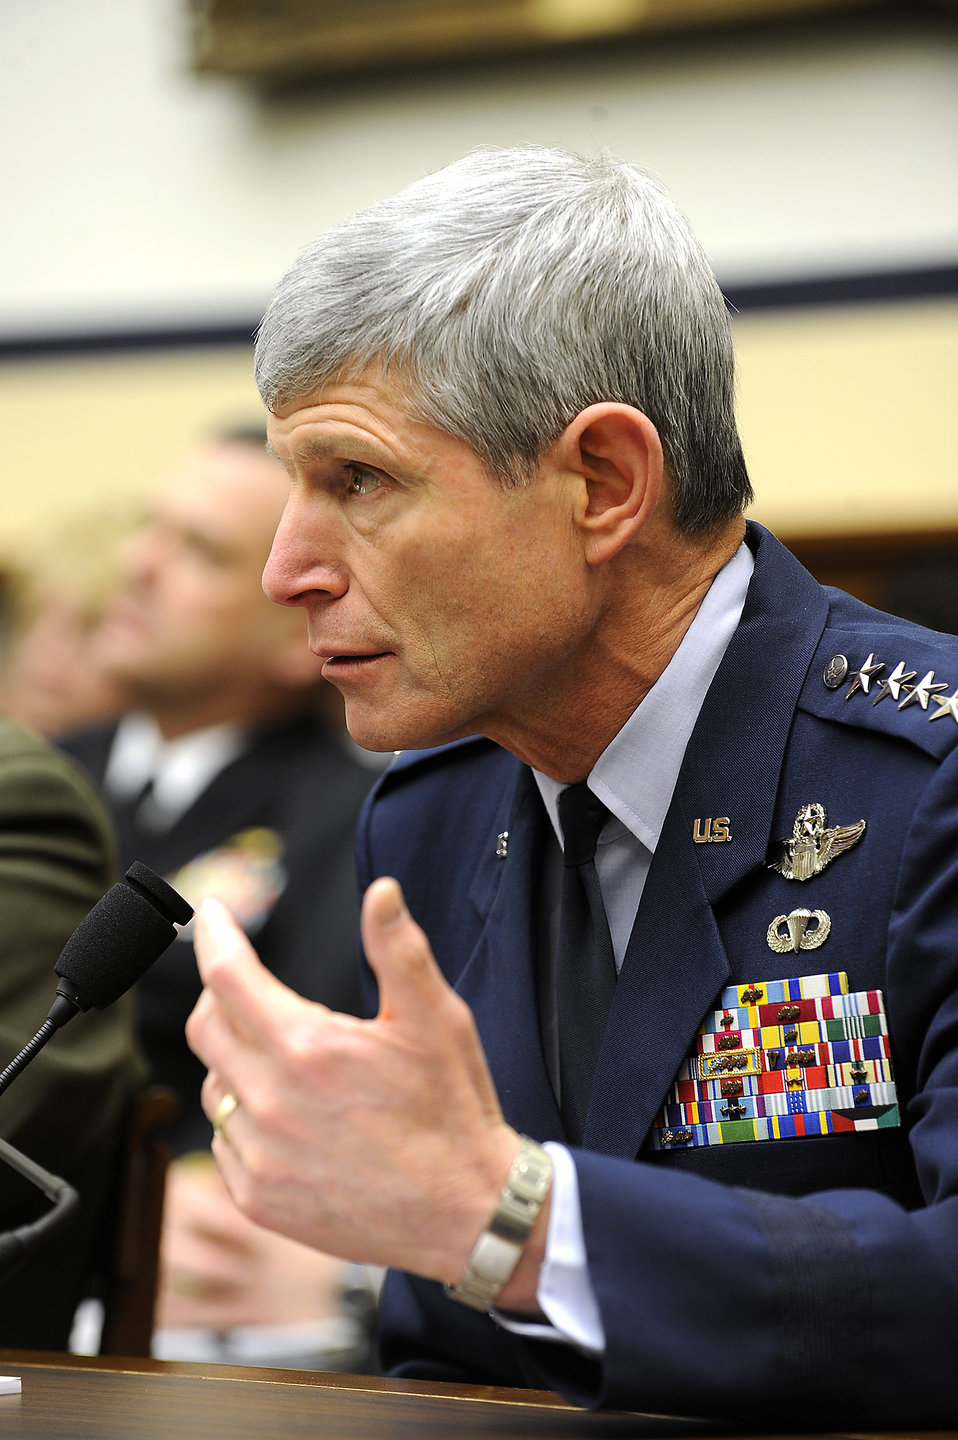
House Armed Services Committee Testimony

Air Force Chief of Staff Gen. Norton Schwartz answers a question during testimony before the House Armed Services Committee in Washington, D.C., on April 7, 2011. General Schwartz provided the committee members the current status of Air Force implementation training for the repeal of the law commonly known as